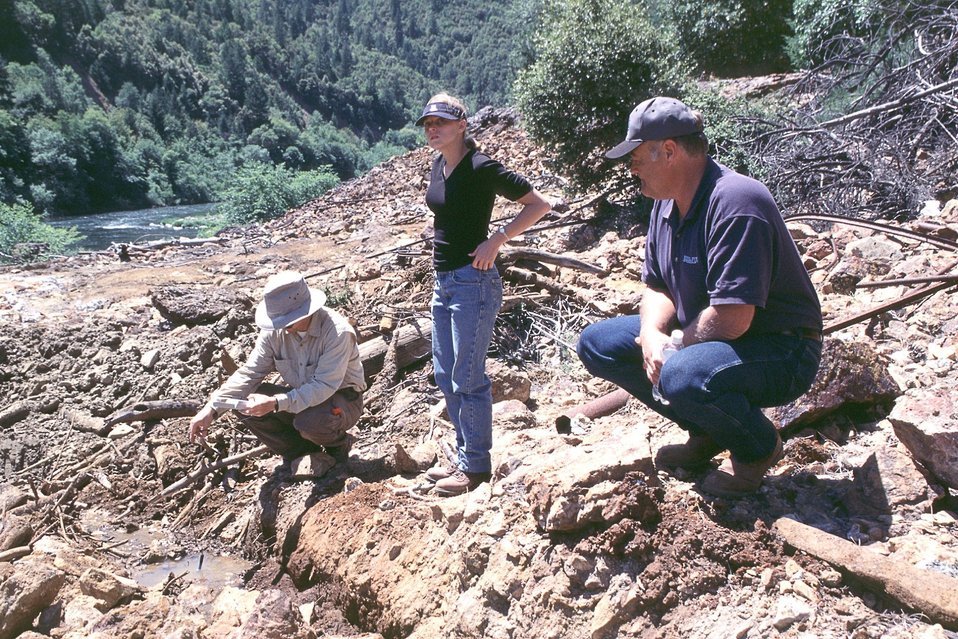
Almeda Mine, Medford District. Testing pH.